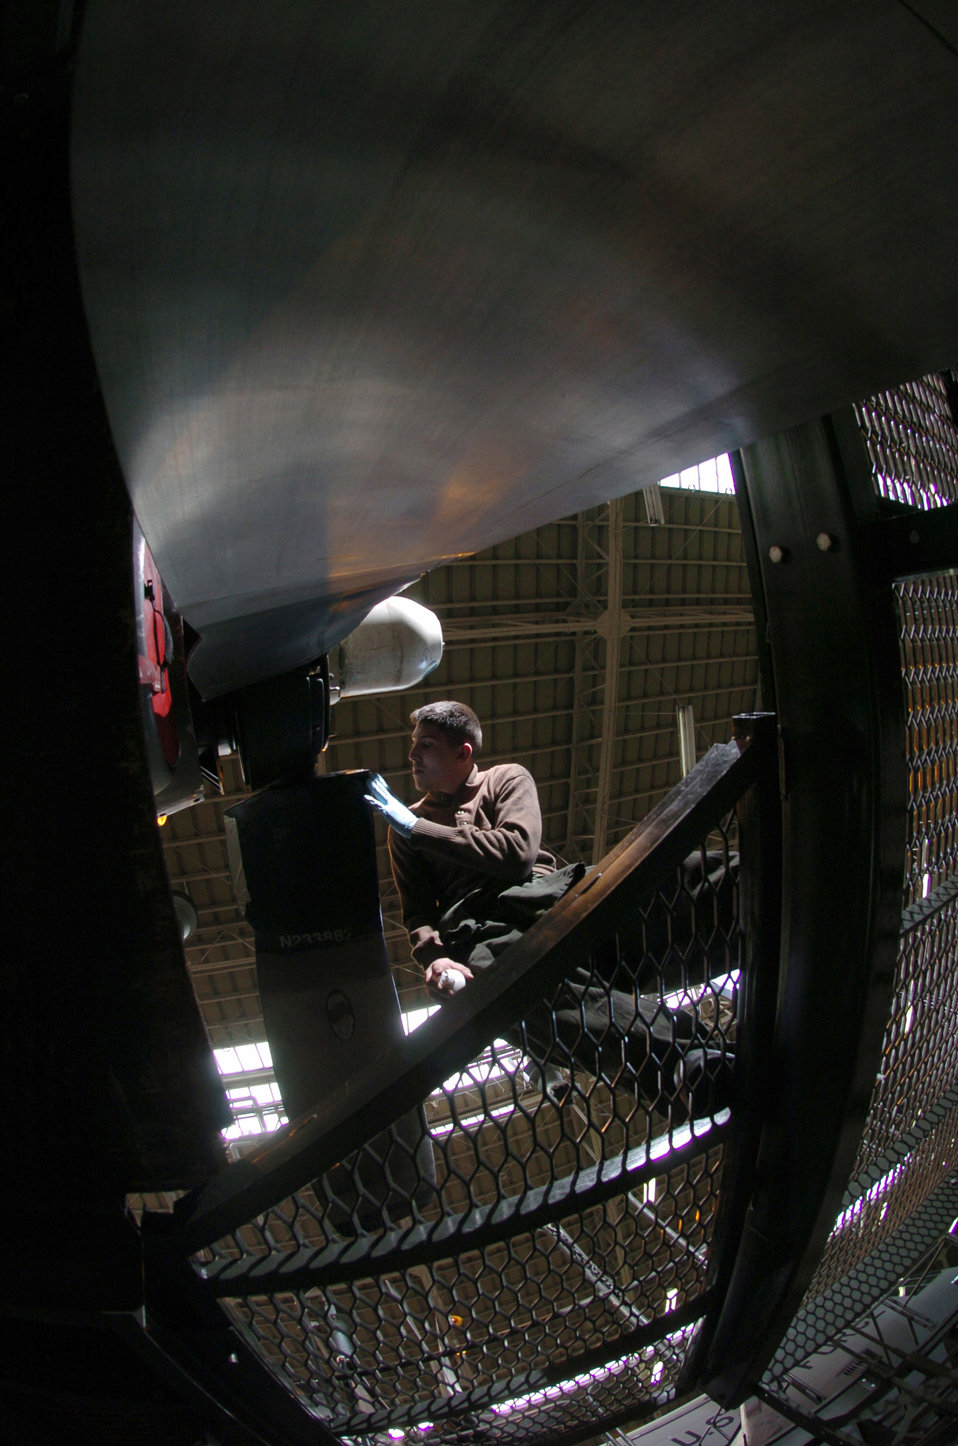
Propeller inspection

YOKOTA AIR BASE, Japan -- Airman 1st Class Joshua Settles inspects the propeller blades of a C-130 Hercules during an inspection here Dec. 8. Airman Settles is an engine specialist assigned to the 374th Maintenance Squadron.